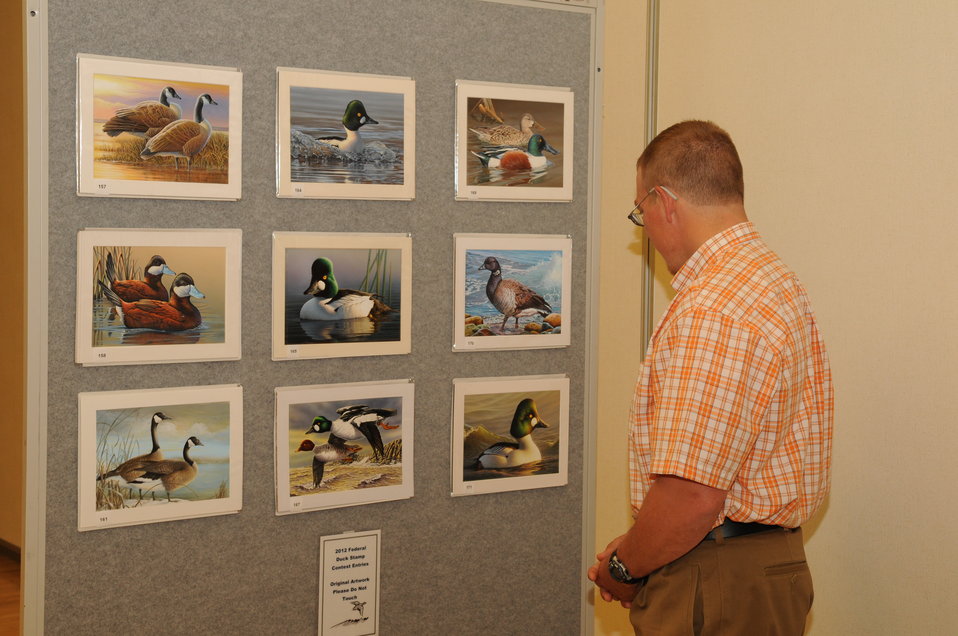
Artwork Viewing

The U.S. Fish & Wildlife Service sponsored the 2012 Federal Duck Stamp Art Contest September 28 and 29 in Ogden, Utah, at Weber State University. A panel of five judges was responsible for choosing the art work used to design the 2013-2014 Migratory Bird Hunting and Conservation Stamp.